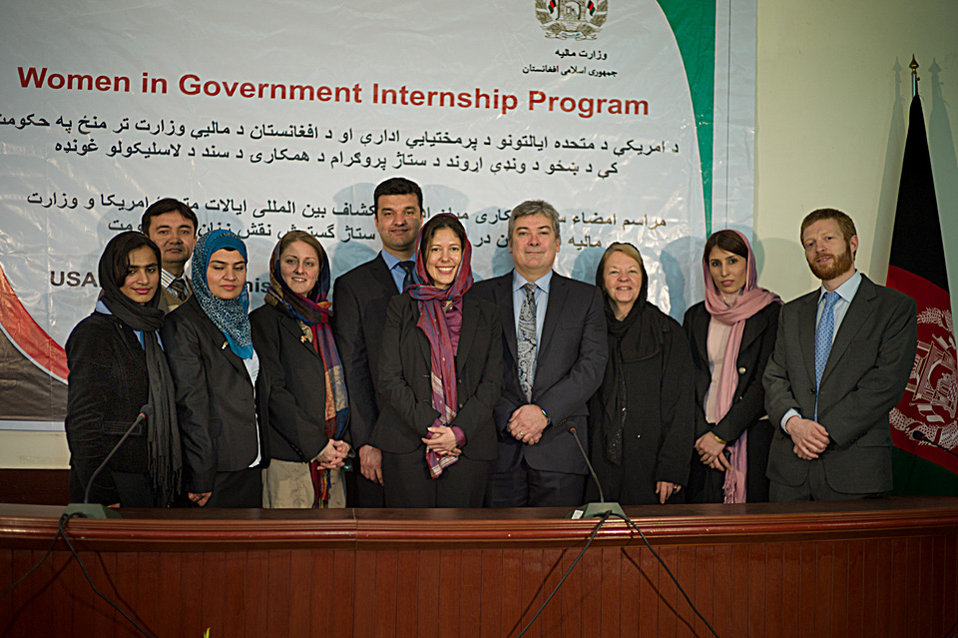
Image 11 3:18:12